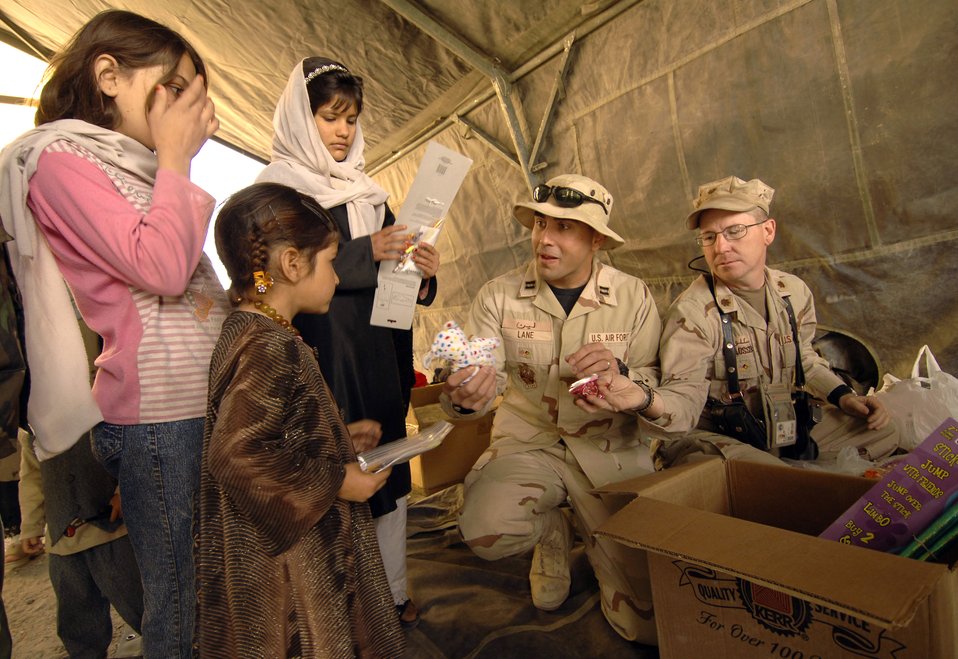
Reaching out

KANDAHAR CITY, Afghanistan (AFPN) -- Maj. David Schlosser and Capt. Craig Lane offer candy and toys to a group of Afghan girls during medical operations at the Shahed Sayed Padsha School Feb. 15.